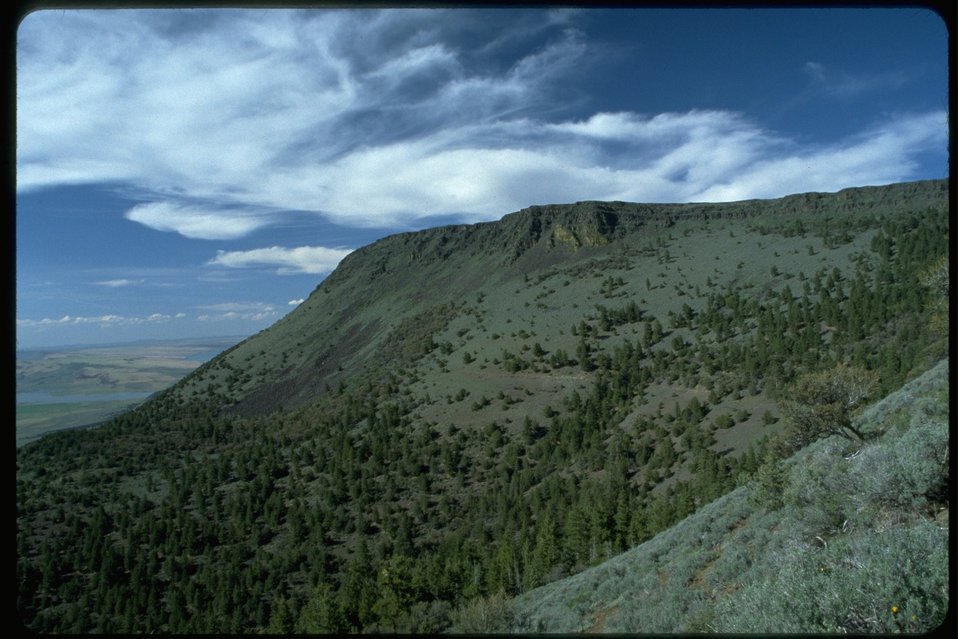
Abert Rim, view from Forest Service Hang Glider Site.